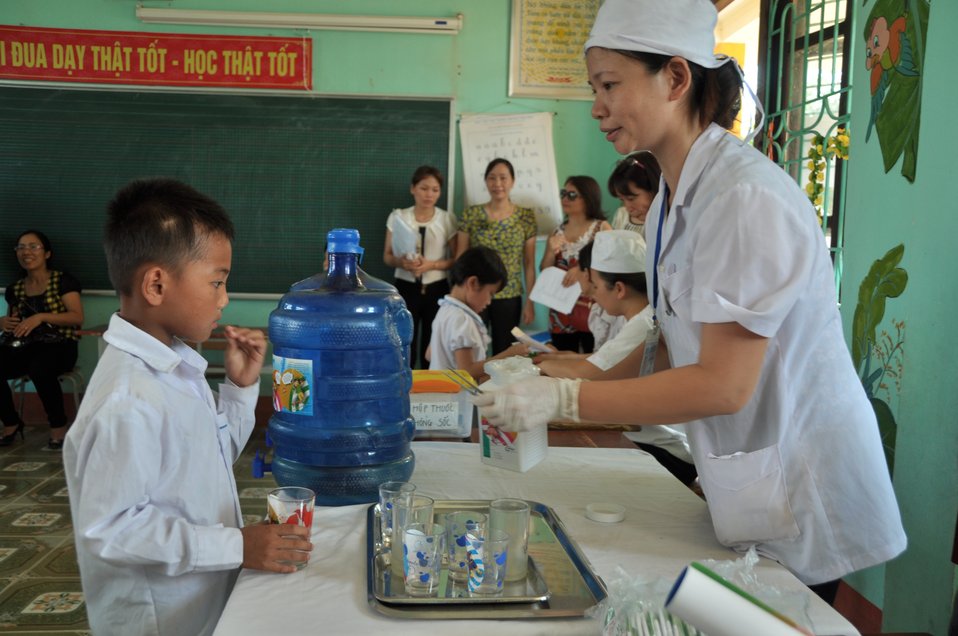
USAID supports deworming education and medication distribution in Bac Giang Province

May 20, 2013